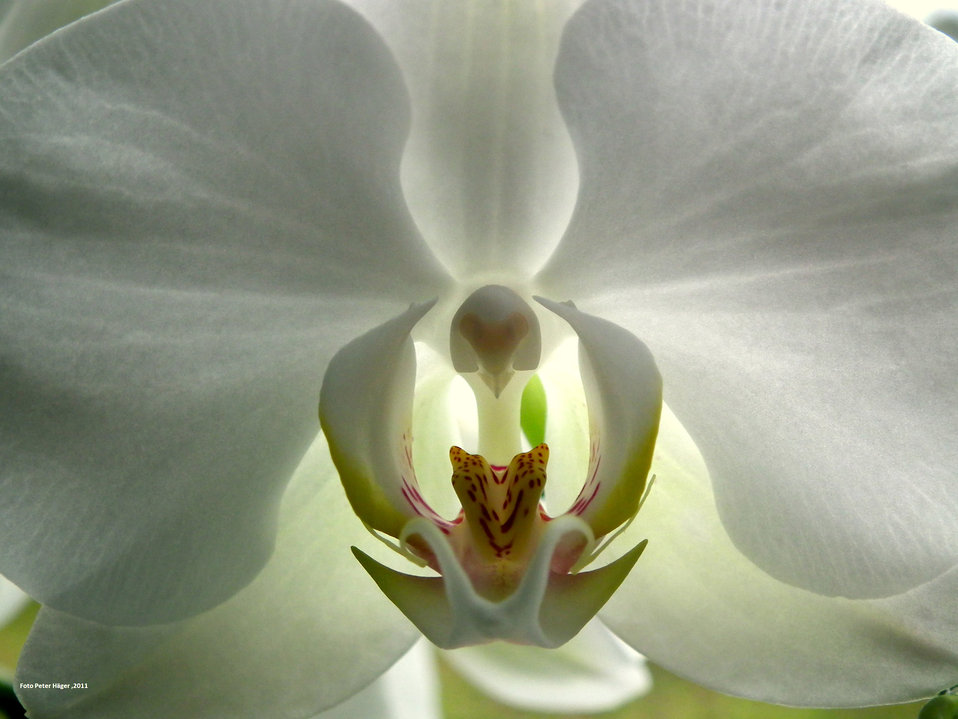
White orchid

Close up of orchid flower.